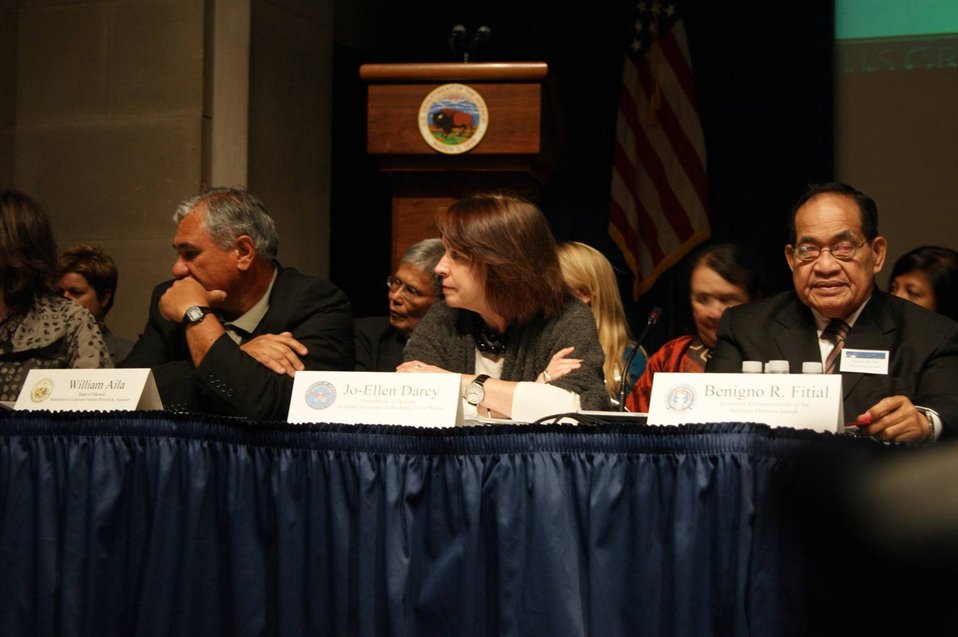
Coral Reef Task Force - Winter Meeting 2012